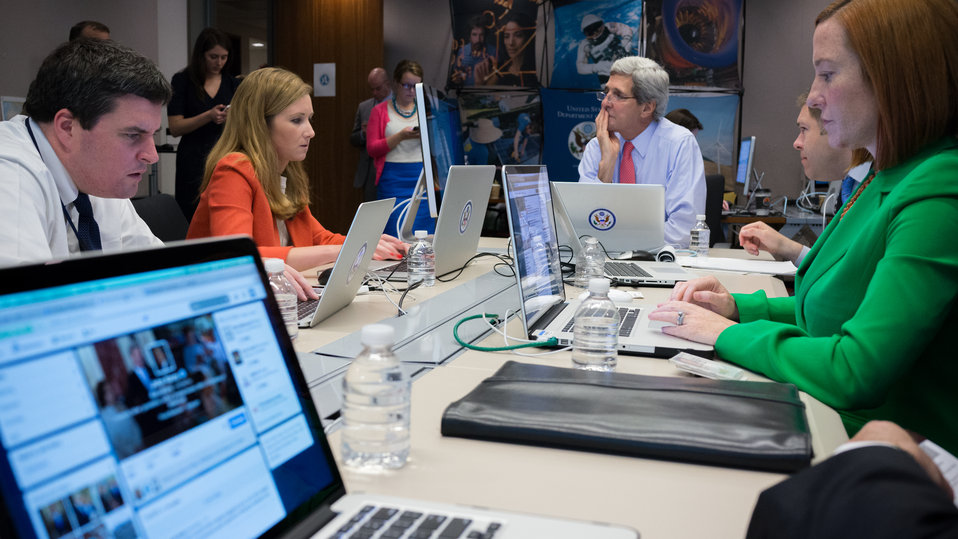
Secretary Kerry Hosts a Twitter Chat

U.S. Secretary of State John Kerry hosts a Twitter chat with the Young African Leaders Initiative Network at the U.S. Department of State in Washington, D.C., on May 9, 2014.